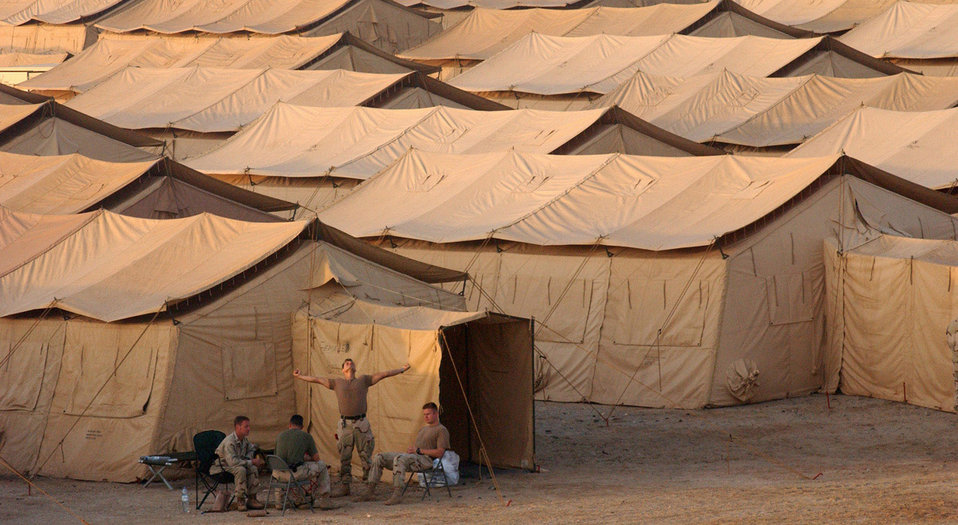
Tent city

SOUTHWEST ASIA -- Tents such as these will eventually house thousands of military people. Several Air Force people from around the United States have deployed to this undisclosed location in support of Operation Enduring Freedom.